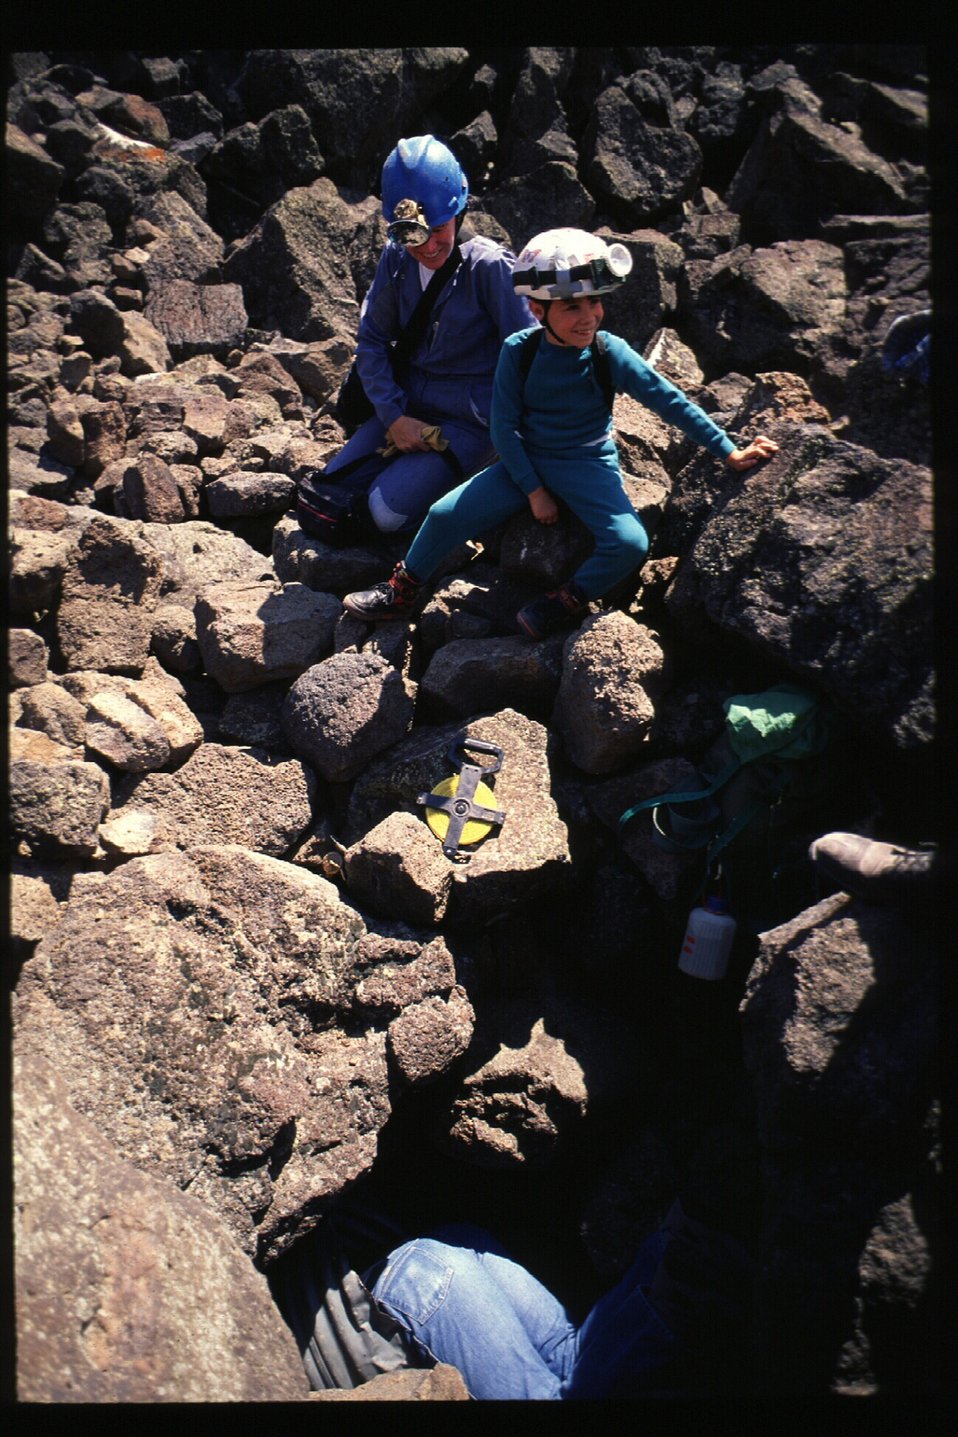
Geology Spelunking Caves Shoshone Field Office USRD Upper Snake River District